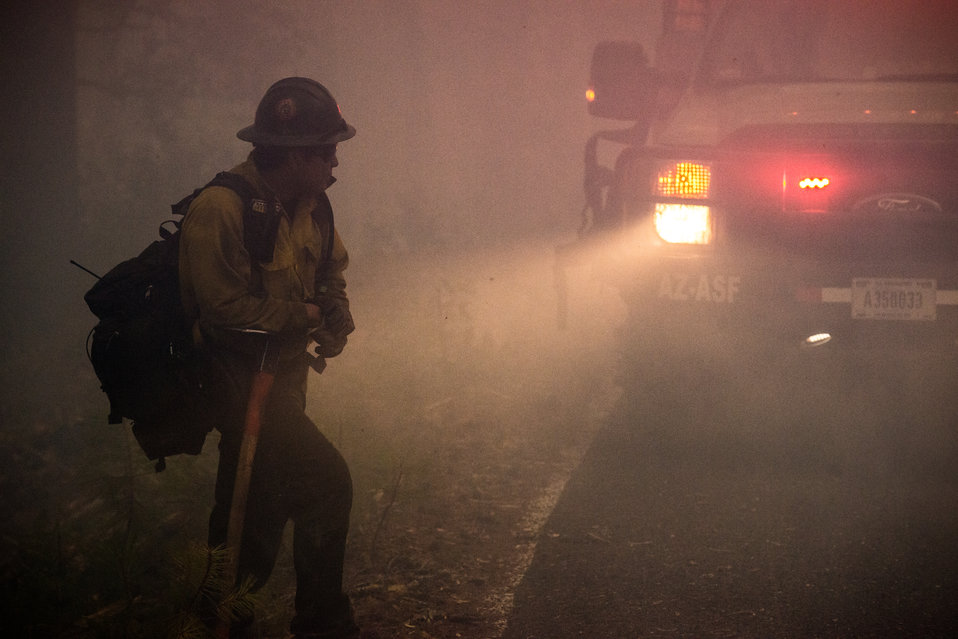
Geronimo Interagency Hotshot Crew, Department of the Interior (DOI) Indian Affairs (IA) Bureau of Indian Affairs (BIA) San Carlos Agency in Arizona; on assignment at the Big Windy Complex Wildlands Fire, approximately 15 miles west of Interstate-5 and East Northeast of Galice, Oregon, conducts a prescribed burn 'burnout' operation to help stop the main fire that may head toward this roadway, on Friday, Aug 9, 2013. The primary mission of the Interagency Hotshot Crews (IHC) is to provide a safe, organized, mobile and highly skilled hand crew for all phases of wildland fire suppression. The arduous duties and specialized assignments required of IHC personnel require uniform staffing, certification, training, equipment, communications, transportation, organization, and qualifications that adhere to interagency standards and guidelines.